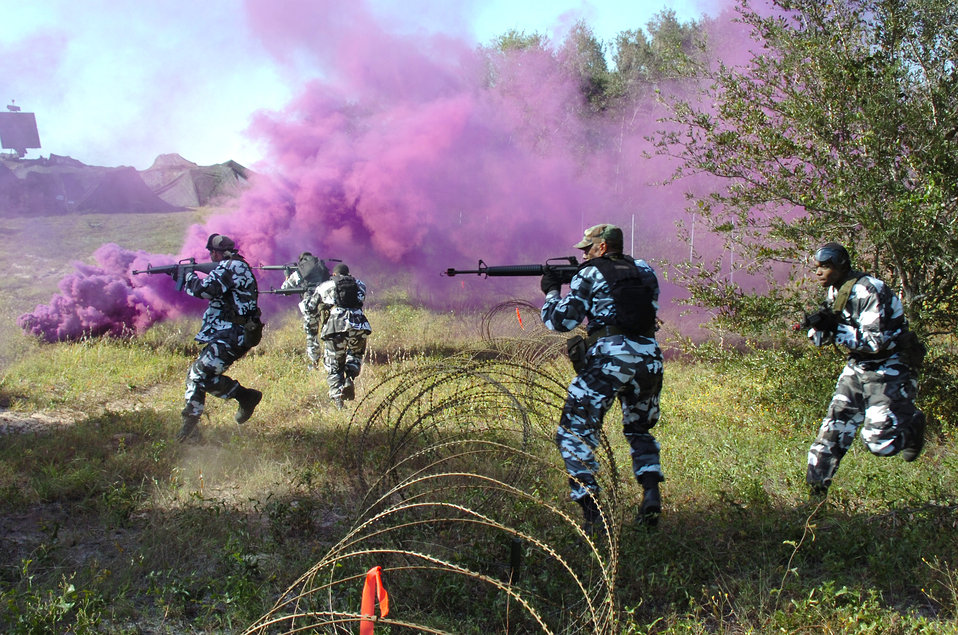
Mock attack

EGLIN AIR FORCE BASE, Fla. -- Amid purple smoke,